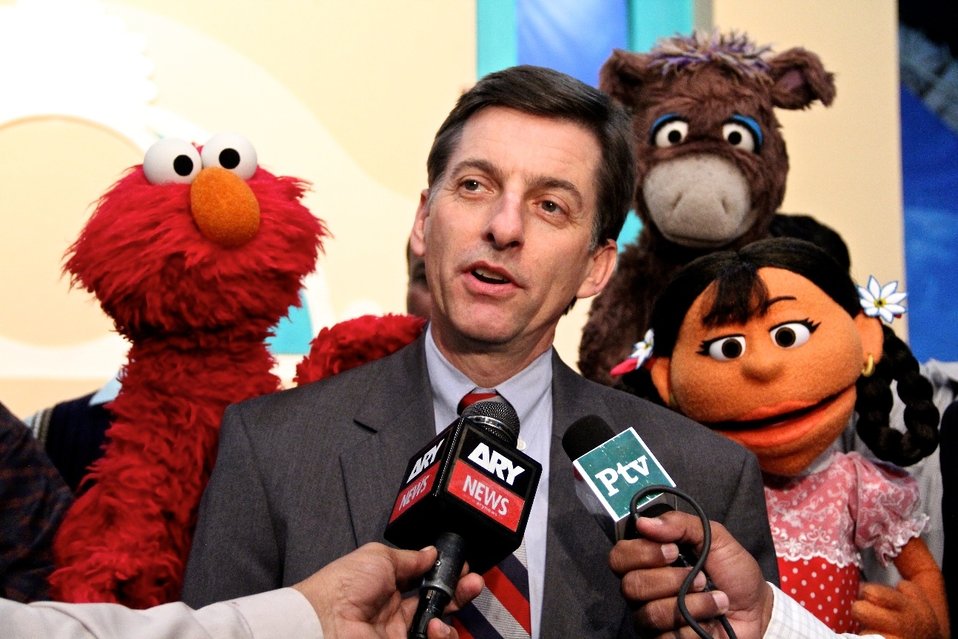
Mr. Andrew Sisson, Director USAID Mission Interview with Pakistan Media on Sim Sim Hamara